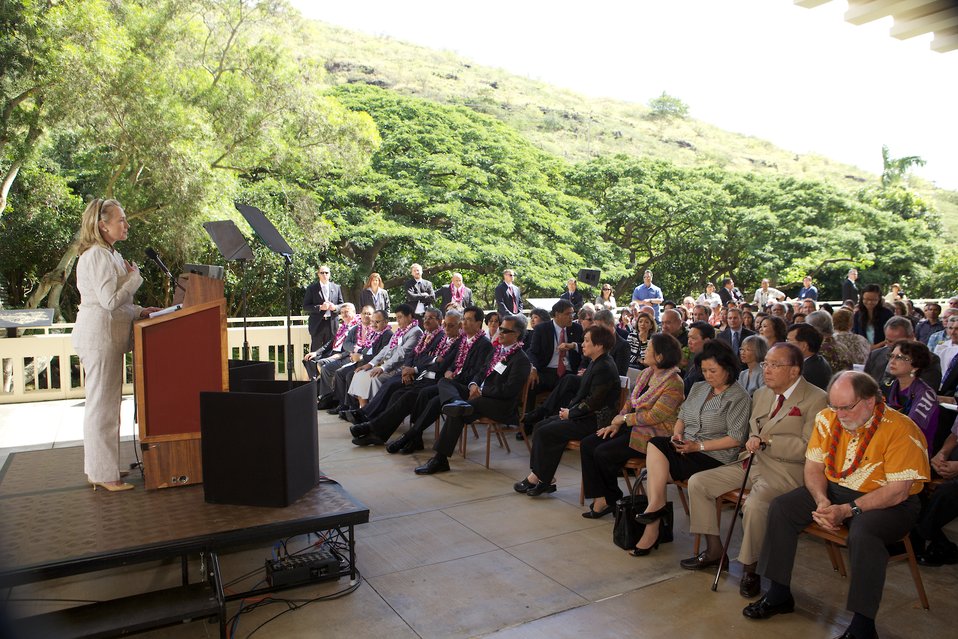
Secretary Clinton Delivers Remarks at the East West Center

U.S. Secretary of State Hillary Rodham Clinton delivers remarks at the East West Center on the campus of the University of Hawaii in Honolulu, Hawaii, on November 10, 2011.